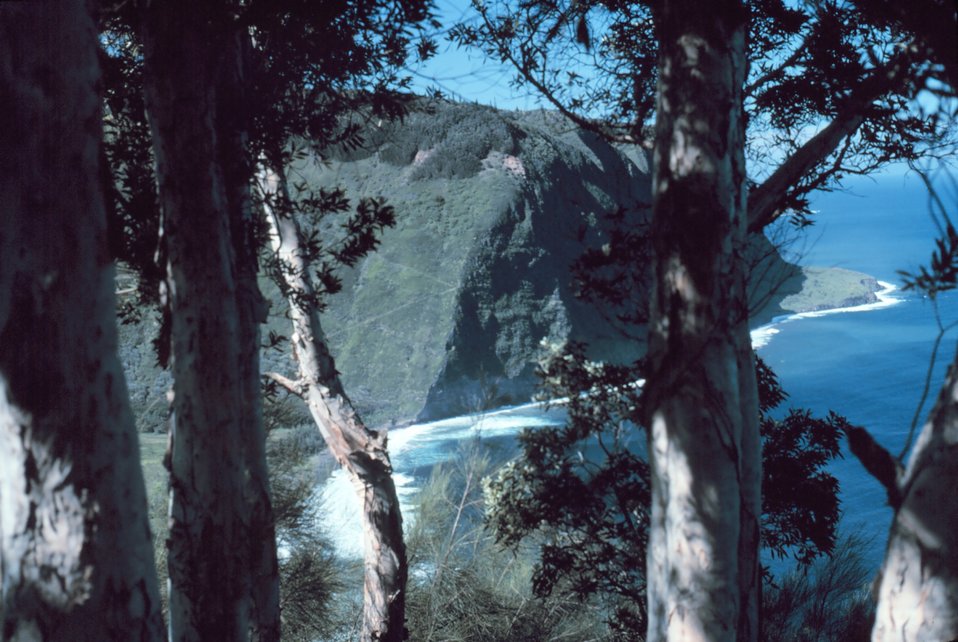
Looking northwest across the Waipio Valley to the Kohala Mountains On the northwest tip of Hawaii.